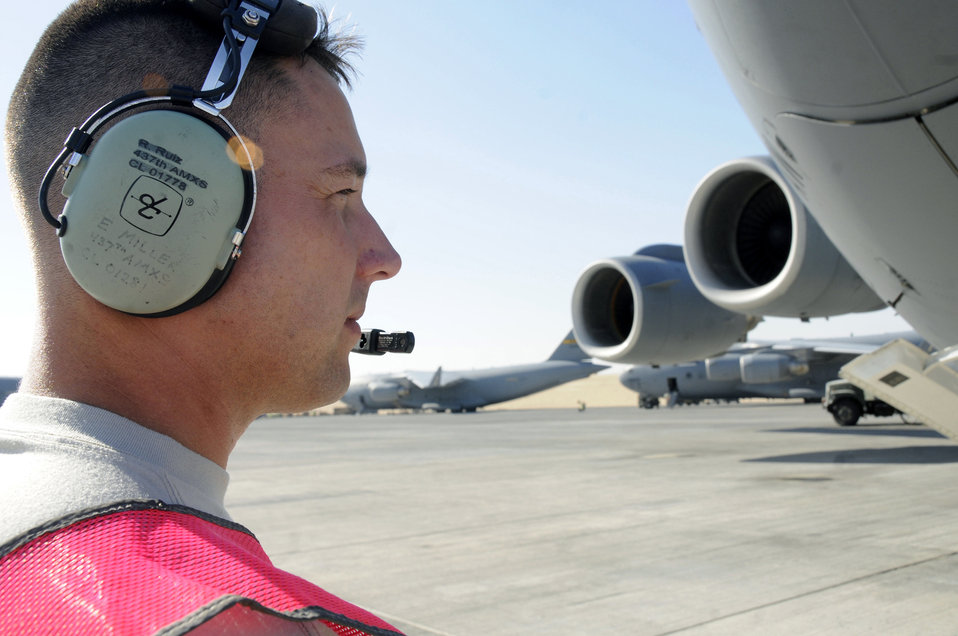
Airlift delivers for warfighters

Senior Airman Eric Miller performs a preflight inspection of a C-17 Globemaster III Nov. 19 at an air base in Southwest Asia. Airman Miller is a communications technician assigned to the 8th Expeditionary Air Mobility Squadron responsible for ensuring the C-17 is capable of flying and carrying out its mission. Airman Miller, a native of Chicago, is deployed from Charleston Air Force Base, S.C.